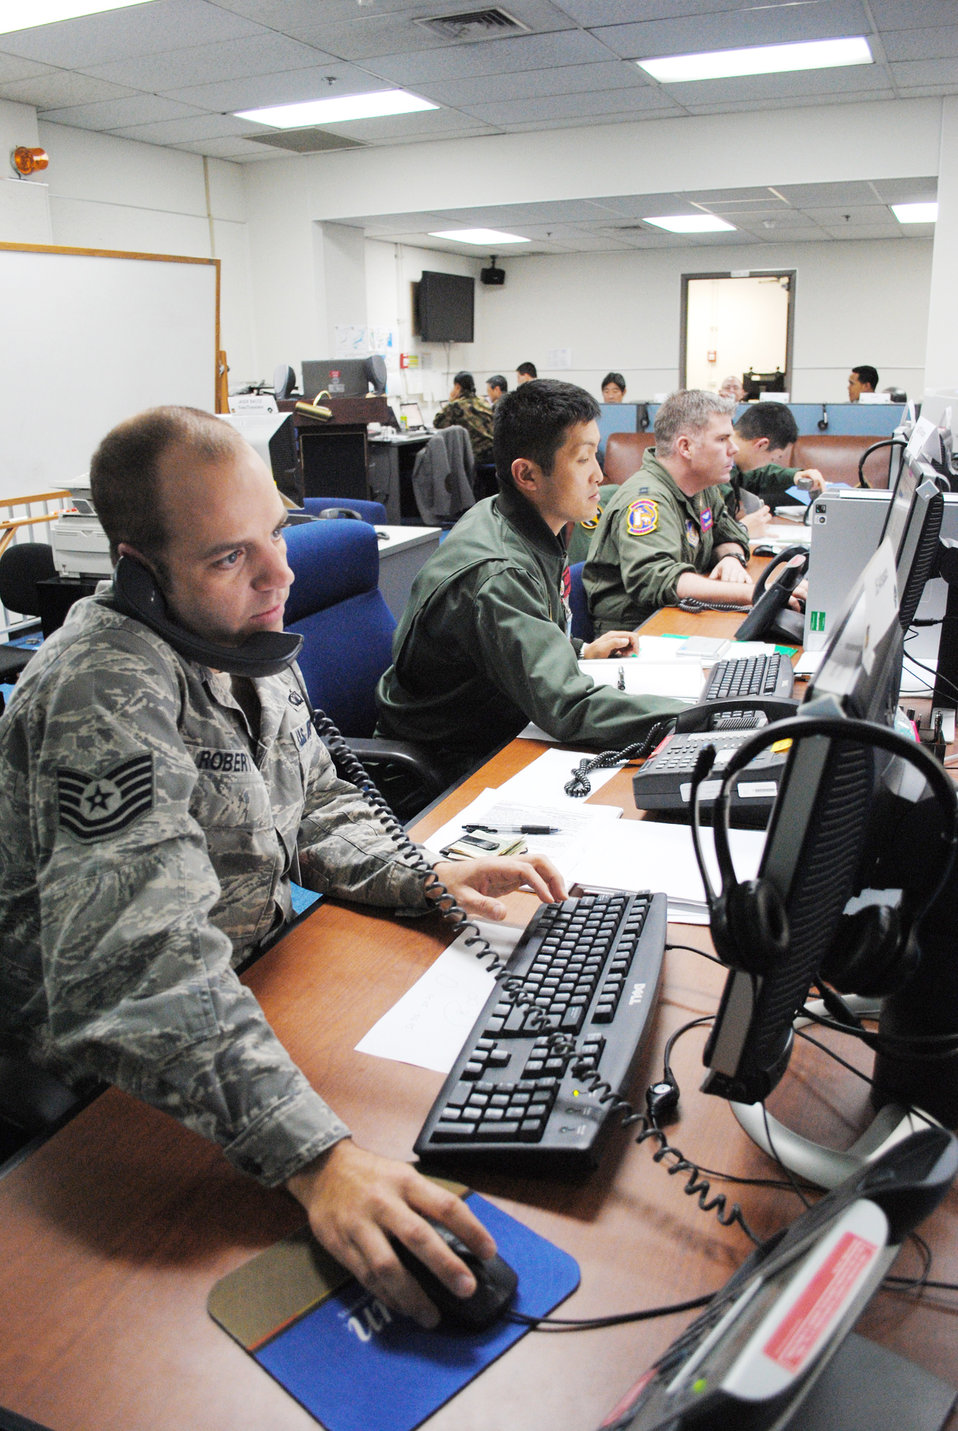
U.S., Japan airmen join forces for bilateral exercise

Tech. Sgt. Charles Roberts coordinates airspace requirements with his Japan Air Self-Defense Force counterpart, 1st Lt. Keisuke Nakajima, during Keen Edge '10 Jan. 25, 2010, at Yokota Air Base, Japan. Exercise participants practice responding to various events to increase combat readiness and interoperability of U.S. forces and Japan Self-Defense Forces. Sergeant Roberts is a Keen Edge combat airspace manager from the 374th Operations Support Squadron.